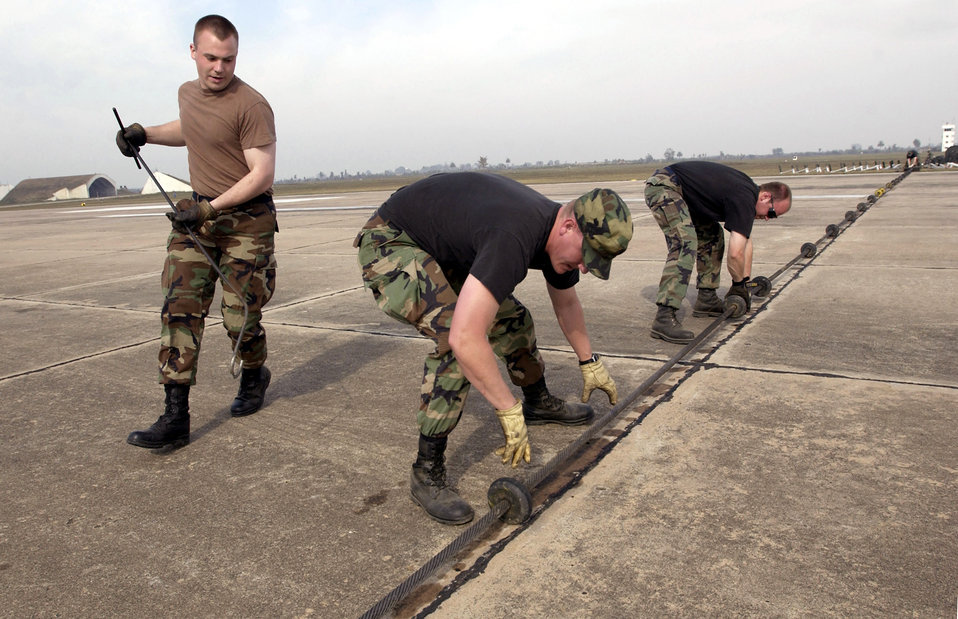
Setting the barrier

GWALIOR AIR FORCE STATION, India -- Airman 1st Class Kevin Baker (left) and Staff Sgts. Robert Roe (center) and Todd Pederson secure the Mobile Aircraft Arresting System cable in place during Cope India 04 here. The MAAS is designed to ensure U.S. pilots land safely in the event of an in-flight emergency.